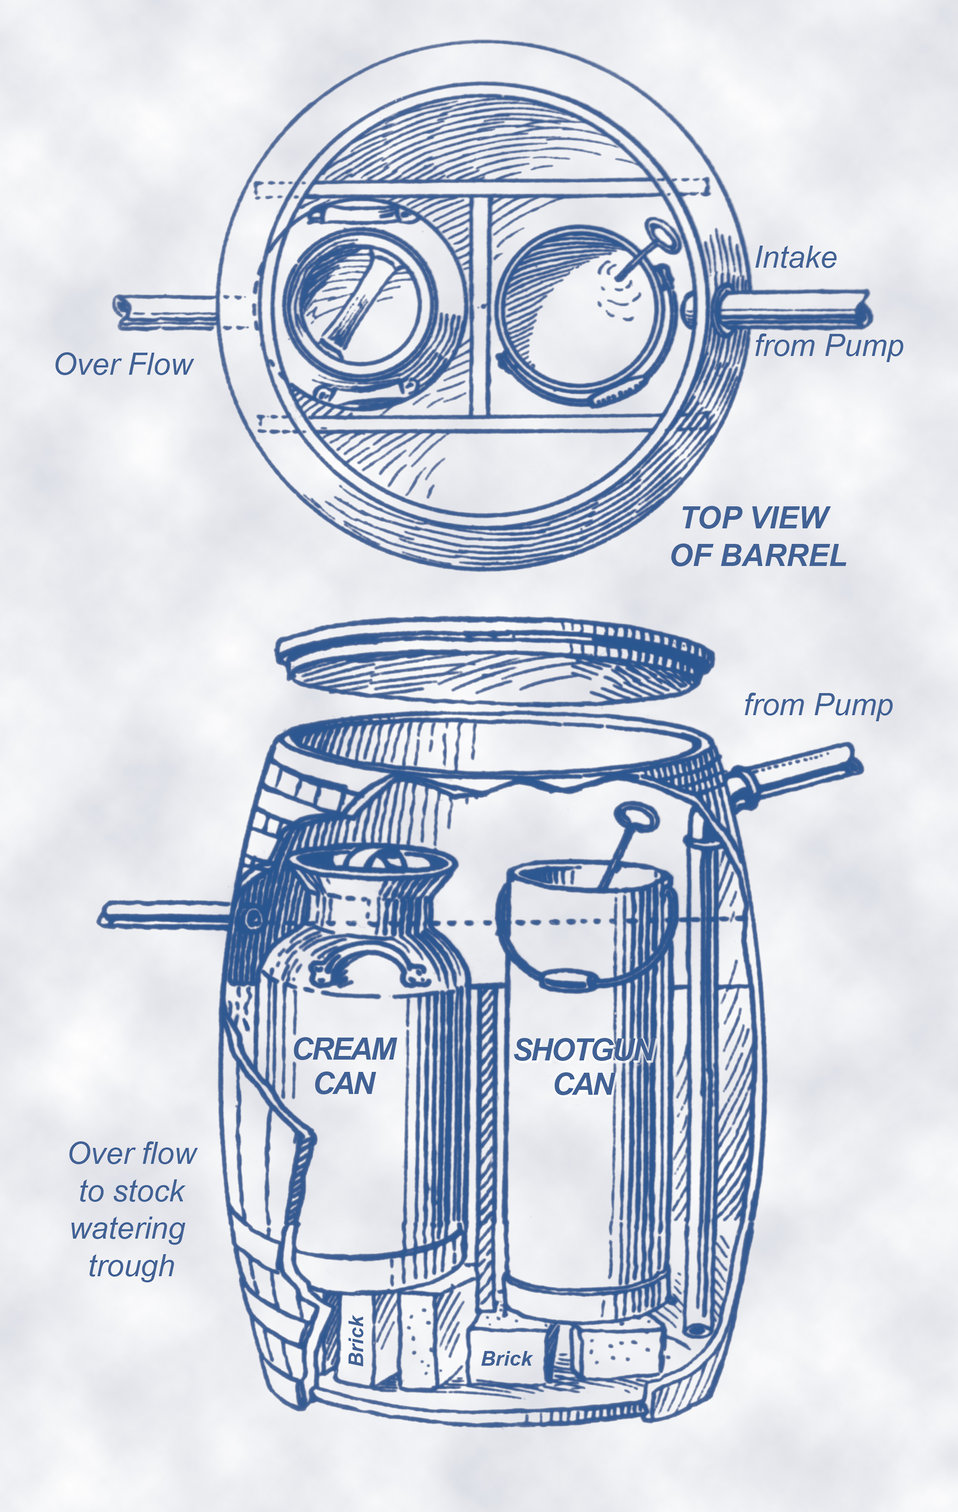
This historic 1929 diagram, which had been digitally enhanced and colorized, depicted a cut-away view of a 'barrel'-type milk and cream cooler. This was one of a series of instructional images used by the Minnesota Board of Health, in order to train the state's public health workers. The purpose of the images and the accompanying training was focused on protecting dairy food supplies from bacterial contamination.